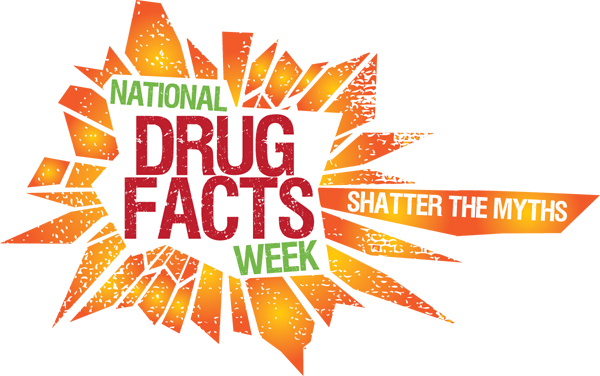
NDFW logo